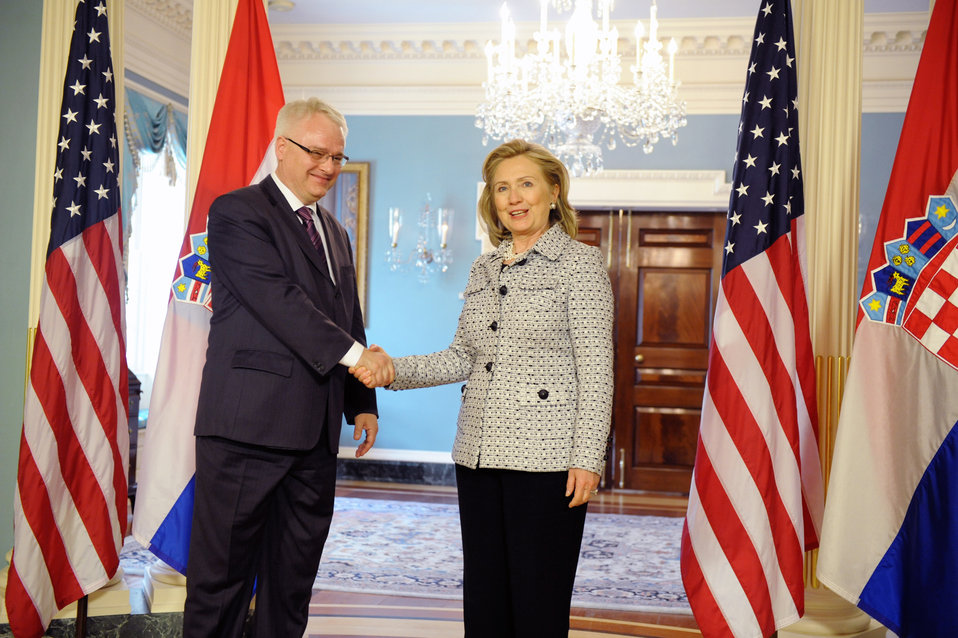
Secretary Clinton Shakes Hands With Croatian President Josipovic

U.S. Secretary of State Hillary Rodham Clinton shakes hands with Croatian President Ivo Josipovic after their bilateral meeting, at the U.S. Department of State in Washington, D.C., on May 3, 2011.